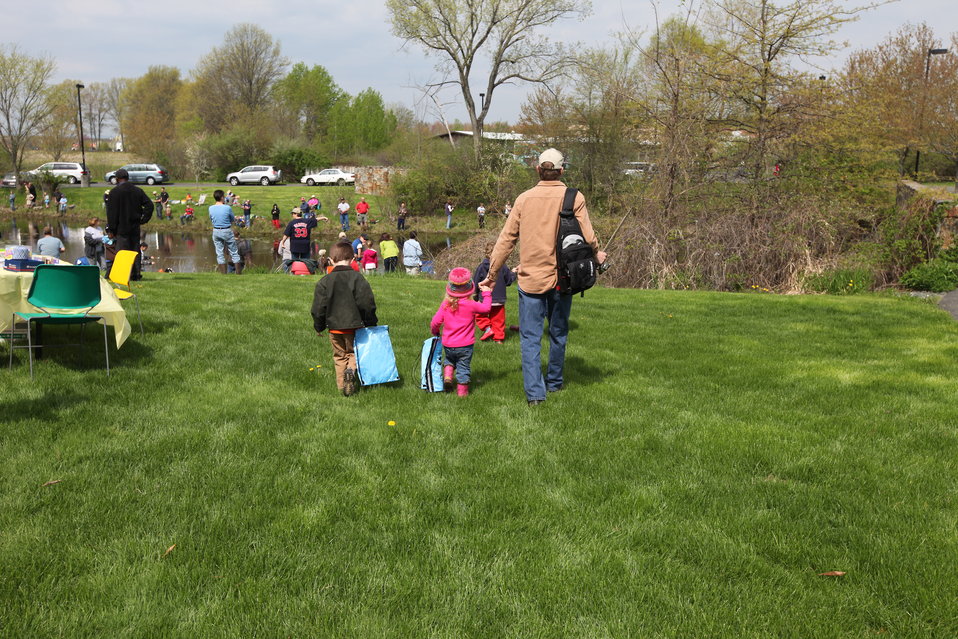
Family about to fish

At the USFWS fishing derby in Hadley, MA.